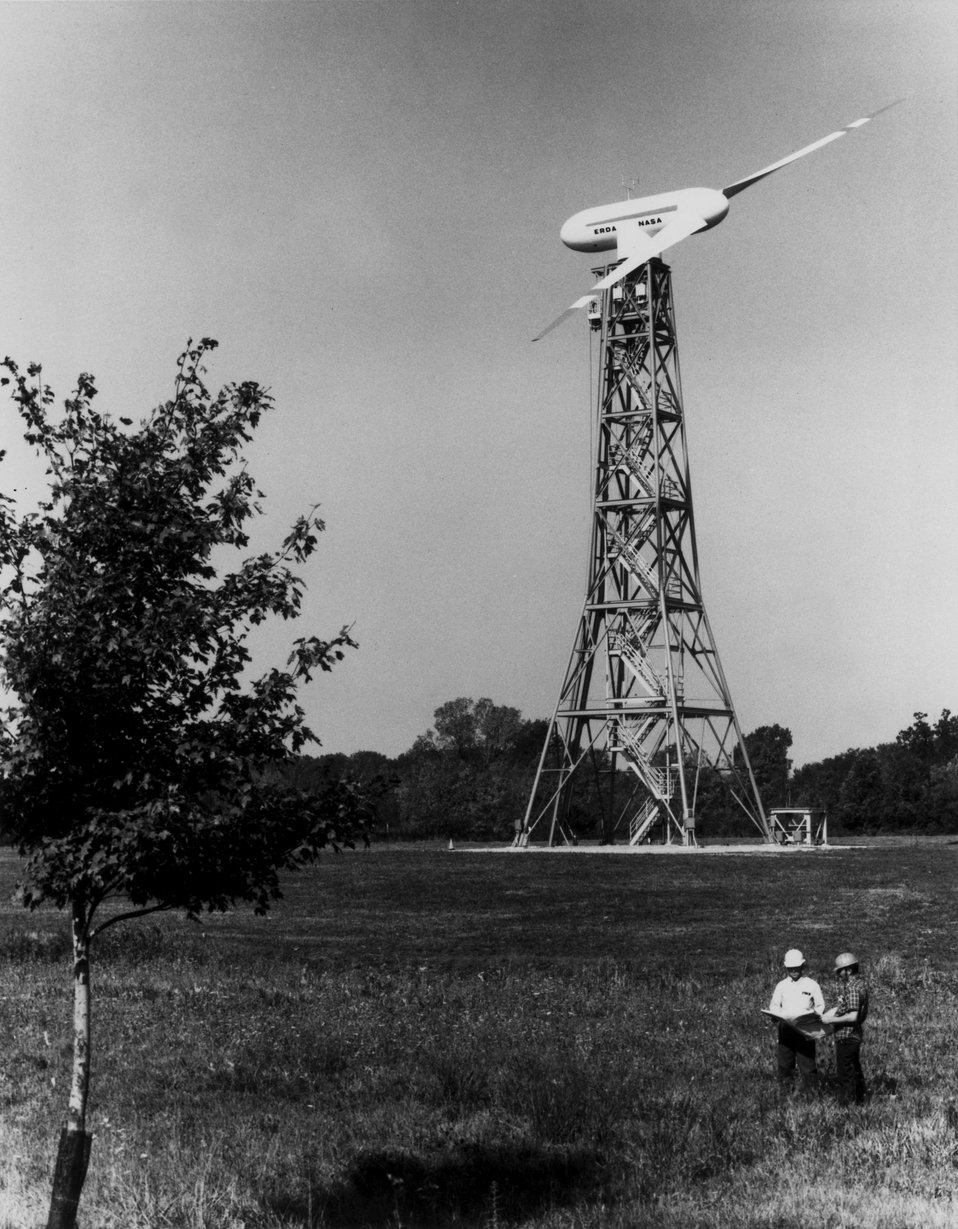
A 125-foot-tall windmill has been developed for the U.S. Department of Energy (DOE) by NASA's Lewis Research Center in Cleveland, Ohio. c. 1975